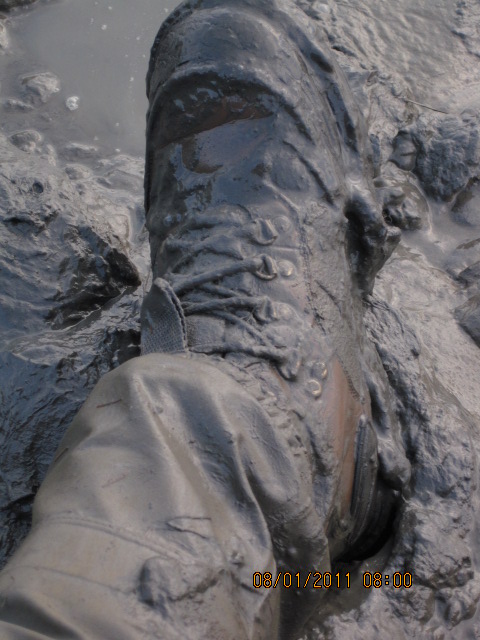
Muddy waders

Expect to have a little mud on you at the end of the day!

USFWS Yukon Delta NWR
Photo Credit: Christine McCafferyPublic domain